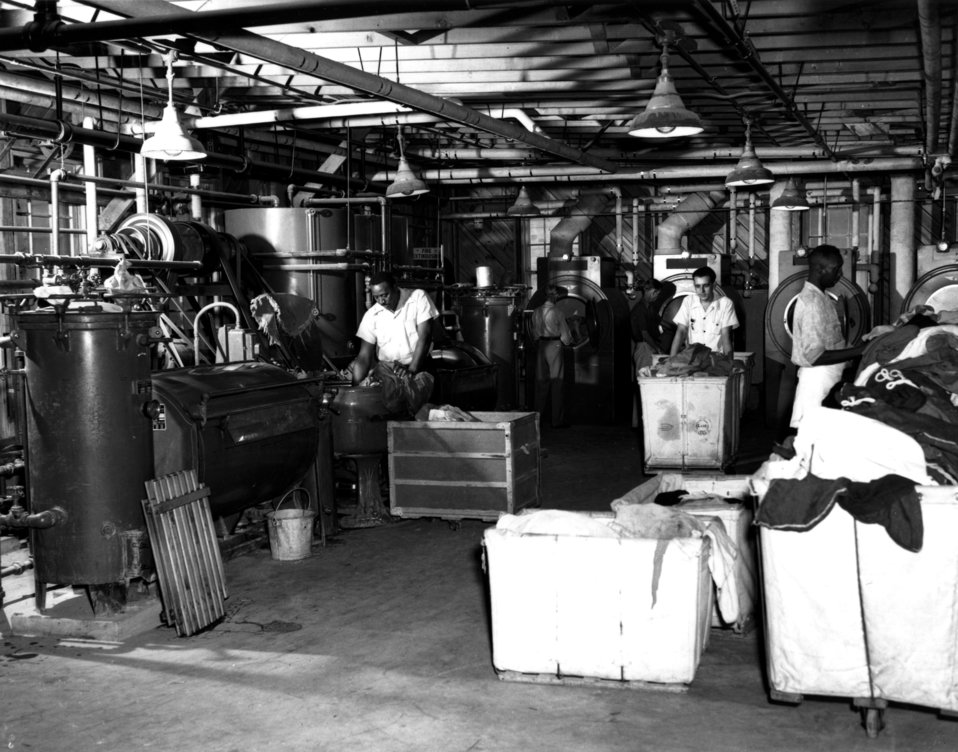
Business activity at Oak Ridge